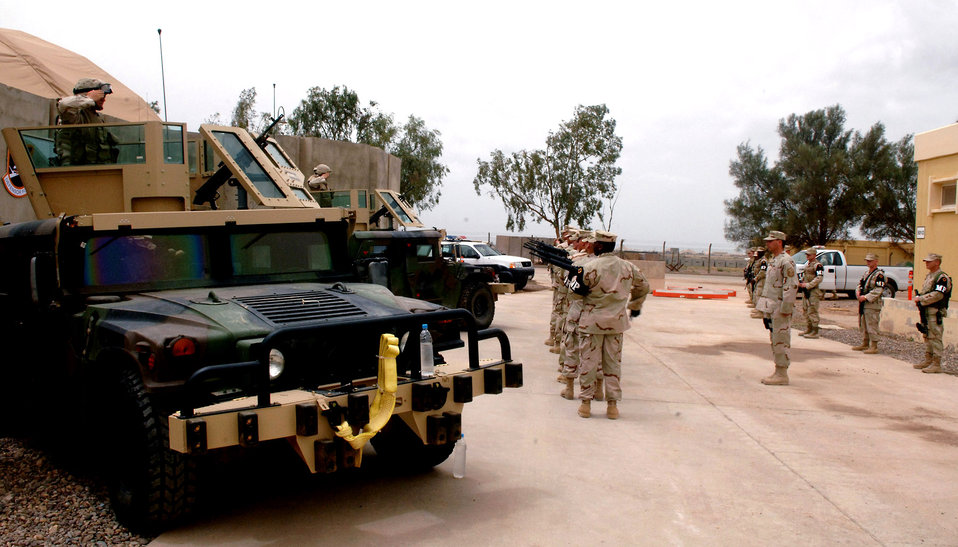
Balad Airmen say goodbye to fallen warrior

Airmen of the 332nd Expeditionary Security Forces Squadron provide a 21-gun salute for Staff Sgt. John Self during a May 18 memorial ceremony at Balad Air Base, Iraq. Sergeant Self died during combat operations May 14 in the Baghdad area.